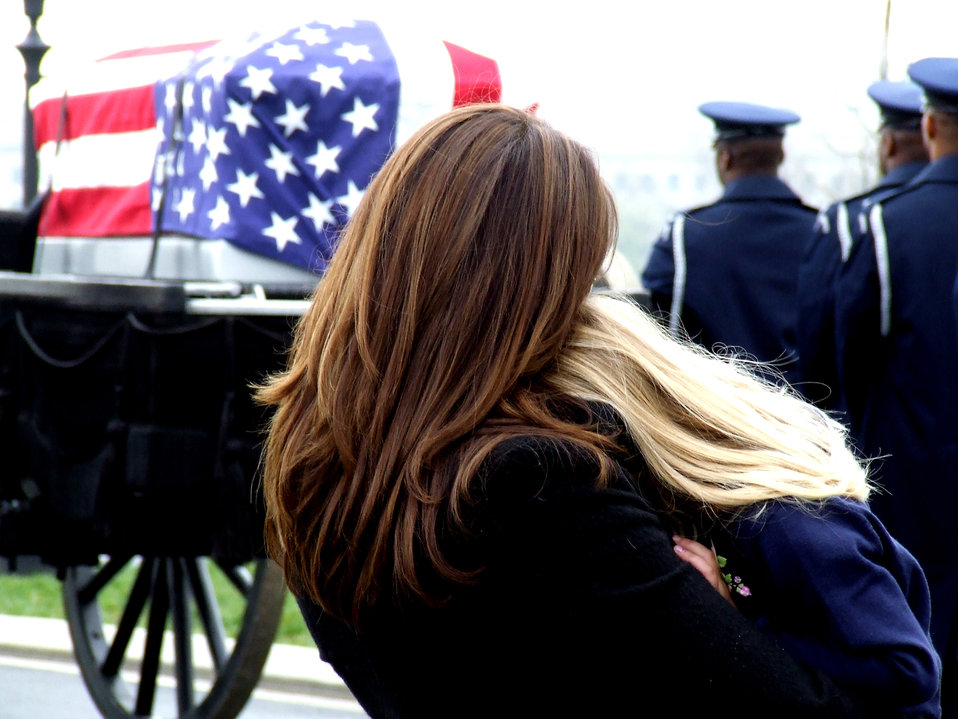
Remember our heroes, and their families, this Memorial Day

Family members Maj. Robert F. Woods, who was missing in action, watch as the cason carrying him is prepared to move to a grave site April 9, 2008, at Arlington National Cemetery, Va. The Air Force announced Nov. 30, 2007, that Major Woods, along with co-pilot Capt. Johnnie C. Cornelius, were identified and their remains returned to the United States from Vietnam.